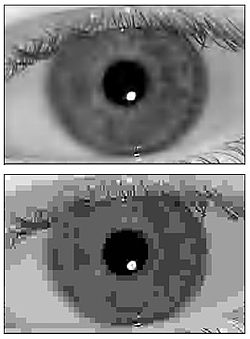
ID Verification

These compressed iris images from the IREX I test illustrate why the JPEG format did not meet the test criteria. The JPEG 2000 format (top) retains its quality after compression for storage and transmission, while the JPEG format becomes pixilated when reduced the same amount.